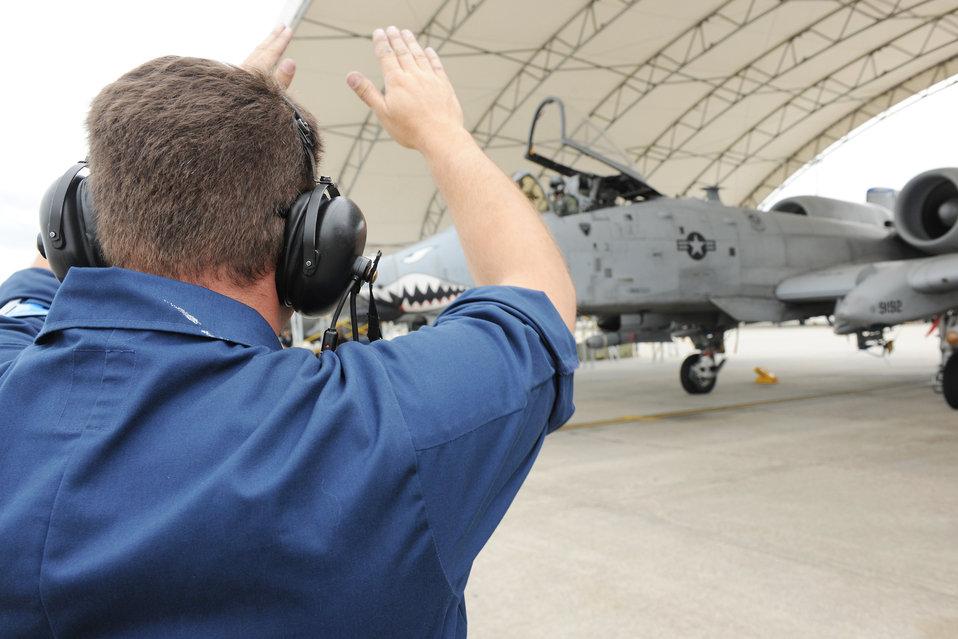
Fighter squadron produces 205 Sorties

Tech. Sgt. Michael Taylor prepares to launch an A-10C Thunderbolt II during the 74th Fighter Squadron surge operations April 27, 2010, at Moody Air Force, Ga. The surge operation's main focus was to test sortie production capability. Sergeant Taylor is a 74th Fighter Squadron crew chief.